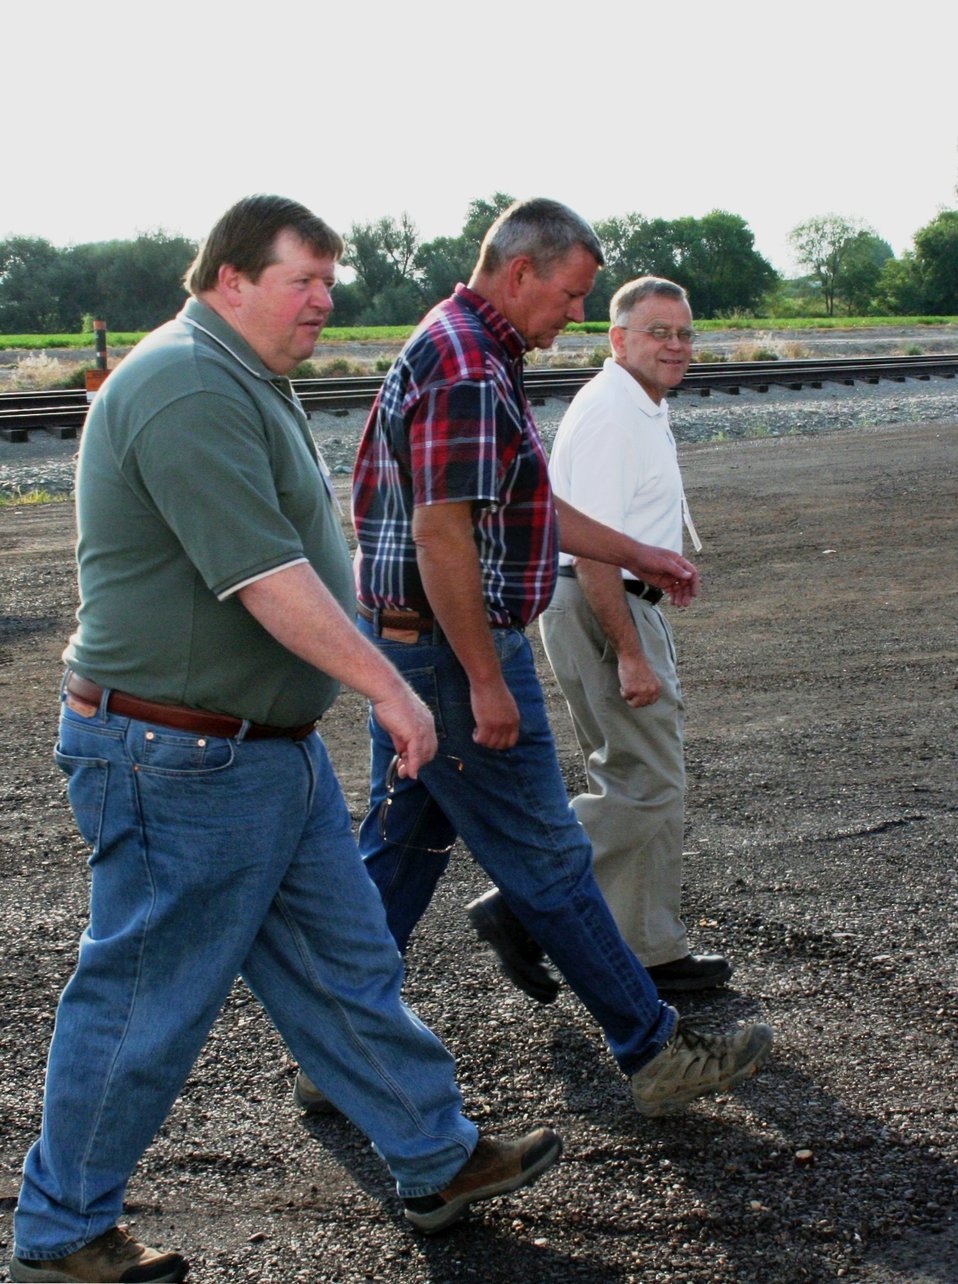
On the Road with Mike Taylor

FDA Deputy Commissioner Michael Taylor (right) and colleagues started a five-day tour of the Pacific Northwest on Sunday, Aug. 11, 2013 -- visiting Idaho, Oregon and Washington -- to get a first-hand look at produce production and irrigation operations, and to discuss the proposed Produce Safety Rule with growers, food industry representatives and state officials. From left, Kay Riley, bulb onion farmer and chairman ad hoc of National Onion Association's food safety committee; Clay Crim, procurement manager at McCain Foods; and Mike Taylor. They are at the McCain Foods, USA facility in Fruitland, Idaho. For more about Mike's multi-region tour, read these FDA Voice blog posts:

• Hearing the Concerns of Maine Growers Striving for Agricultural Diversity
• On the Road with Mike Taylor: Touring the Pacific Northwest
• On the Road with Mike Taylor, Day 2: Frank Talk in Farm Country
• On the Road with Mike Taylor, Day 3: Families and Partnerships
• On the Road with Mike Taylor, Day 4: Looking to the Future